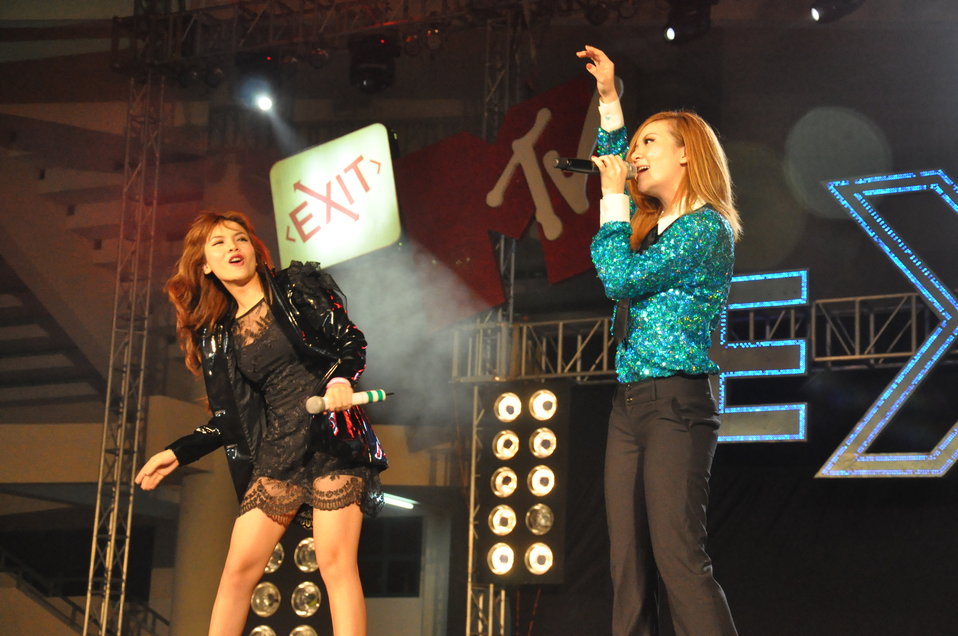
USAID and MTVEXIT concert in Can Tho

Concert in Can Tho against human trafficking, April 10, 2010